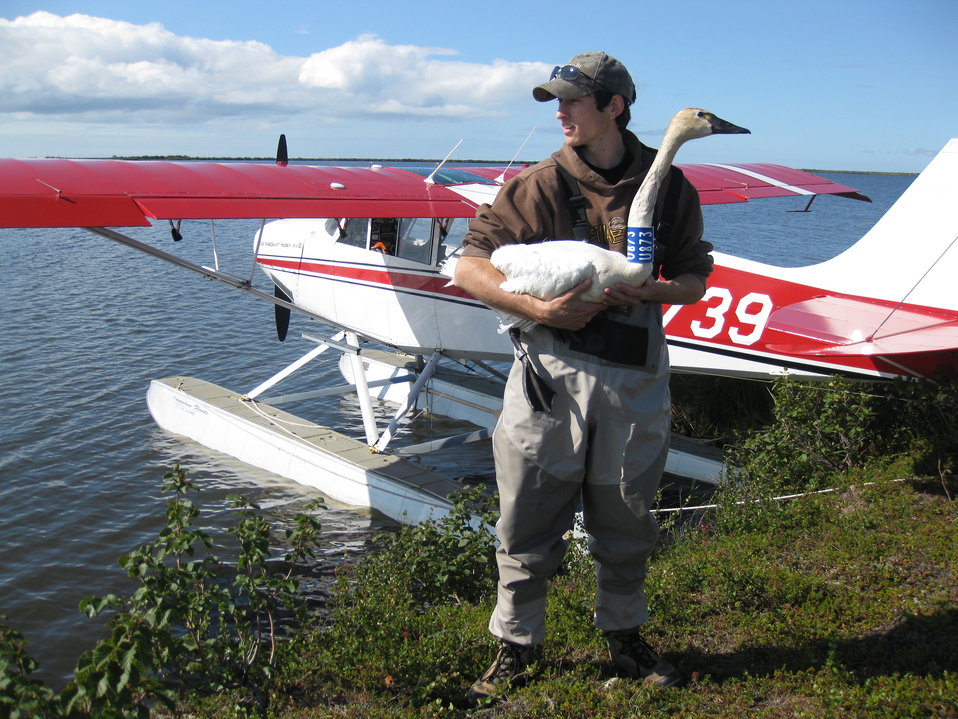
Floatplane in Alaska